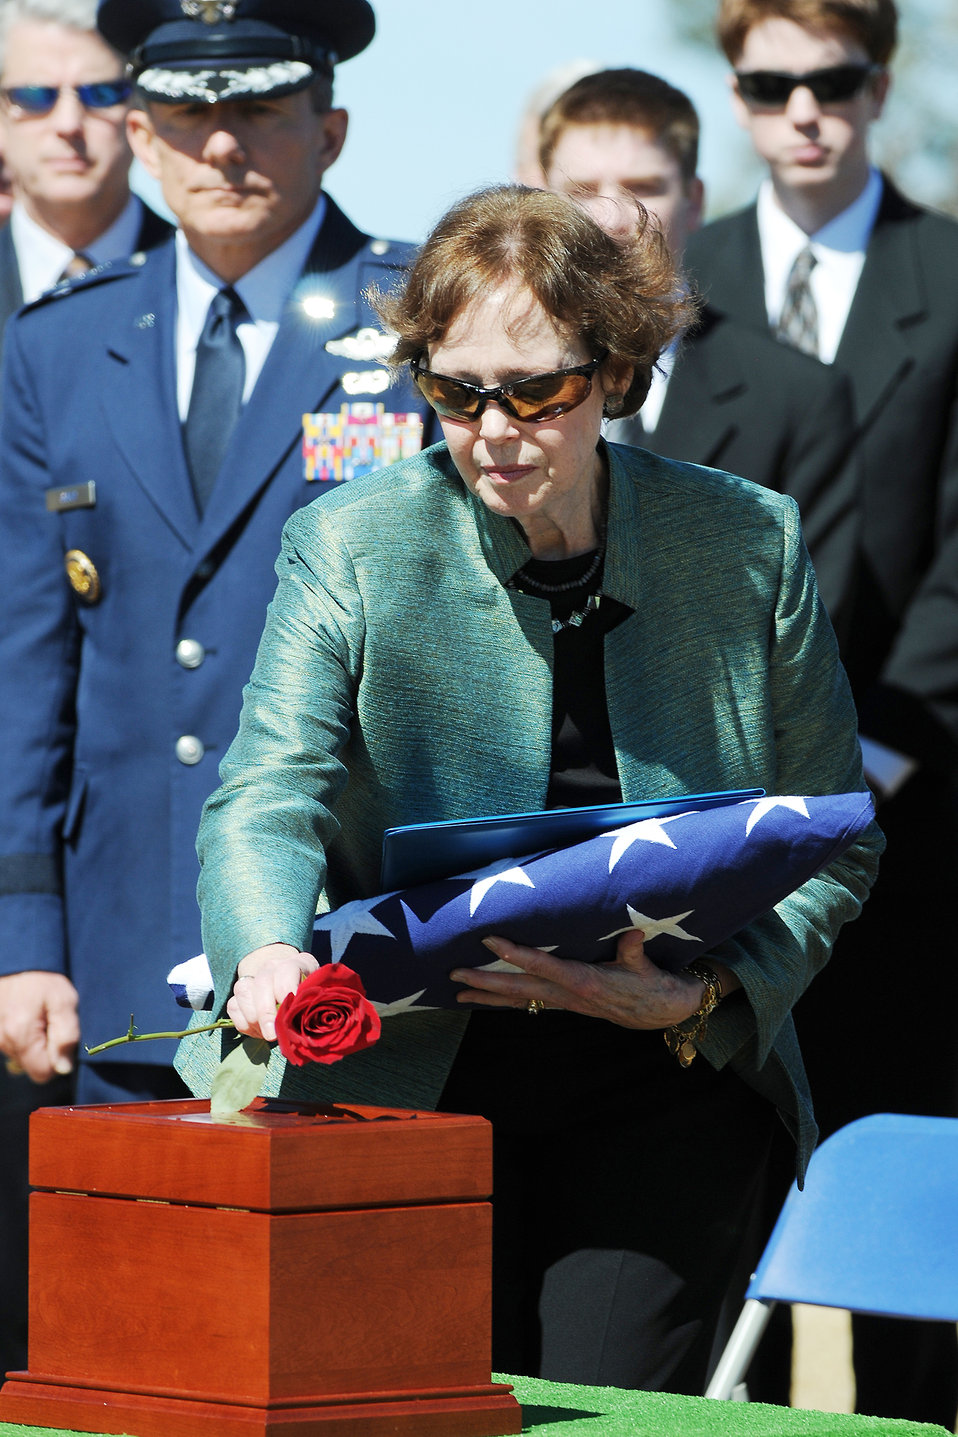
General Clark honored with service

Carolyn Clark Miller, daughter of Lt. Gen. Albert P. Clark, honors her father by placing a rose on his remains during a graveside service held March 17, 2010, at the Air Force Academy Cemetery in Colorado. General Clark, who died March 8, was the Academy's sixth superintendent from Aug. 1, 1970 to July 31, 1974. The general was a 1936 graduate of West Point and went on to a flying career after graduation. He spent 33 months as a prisoner of war after getting shot down flying a British Spitfire over Abbeville, France, in July 1942.